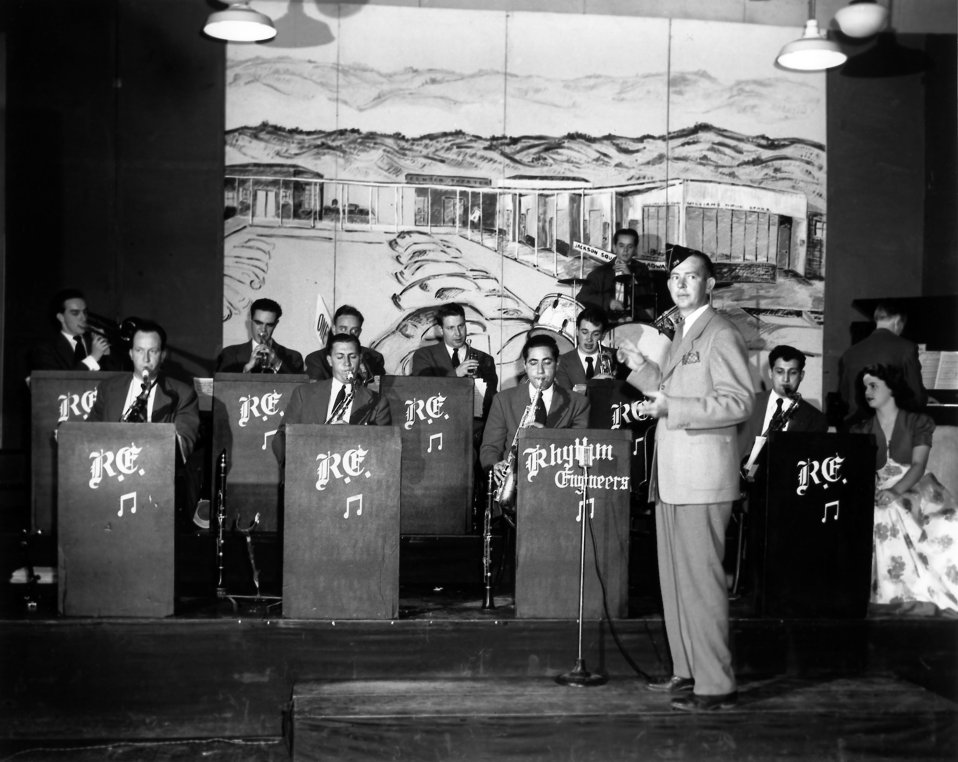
Phil Shelby and Band Oak Ridge

pro 549 DOE photo Ed Westcott 5/11/45
Oak Ridge Tennessee